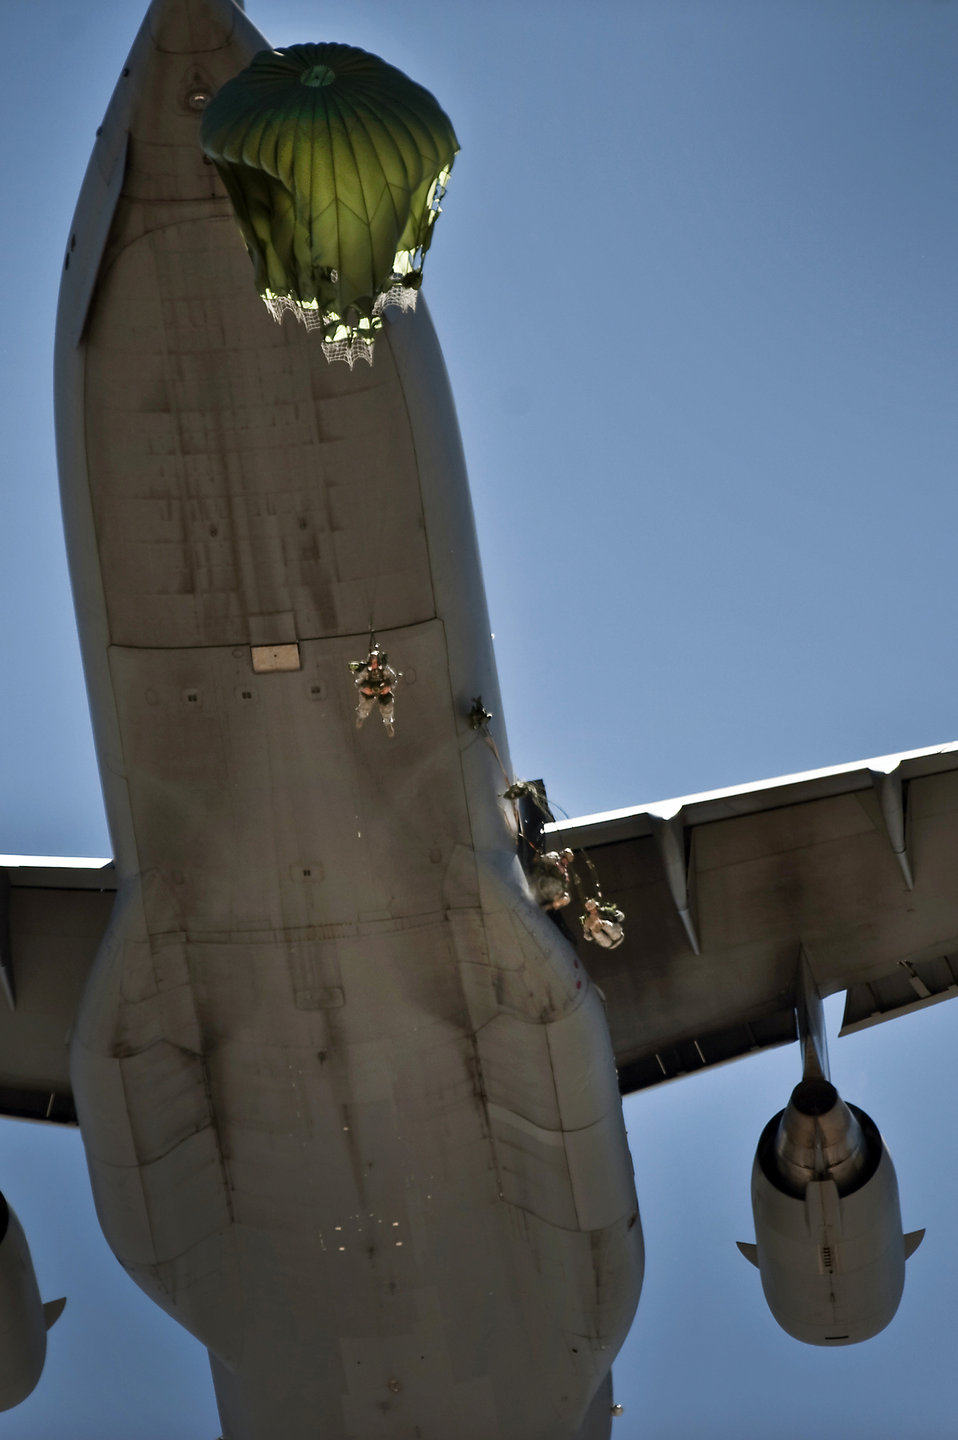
RED HORSE airborne flight

Airmen assigned to the 820th RED HORSE Squadron jump from a C-17 Globemaster III May 12, 2011, during a training exercise above Alamo, Nev.